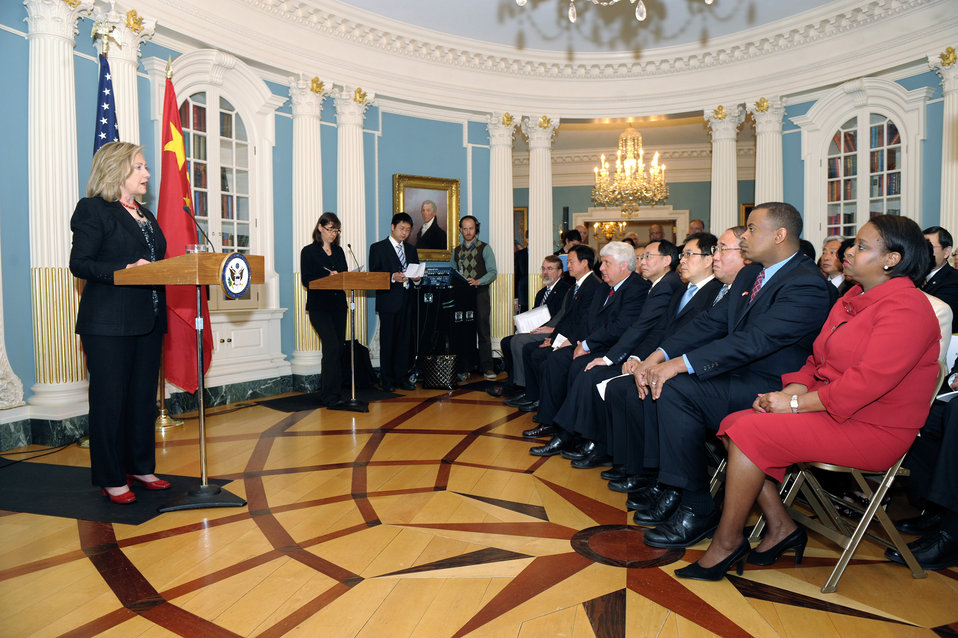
Secretary Clinton Delivers Remarks at U.S.-China EcoPartnerships Signing Ceremony

U.S. Secretary of State Hillary Rodham Clinton delivers remarks at the U.S.-China EcoPartnerships Signing Ceremony, at the U.S. Department of State in Washington, D.C., on May 10, 2011.